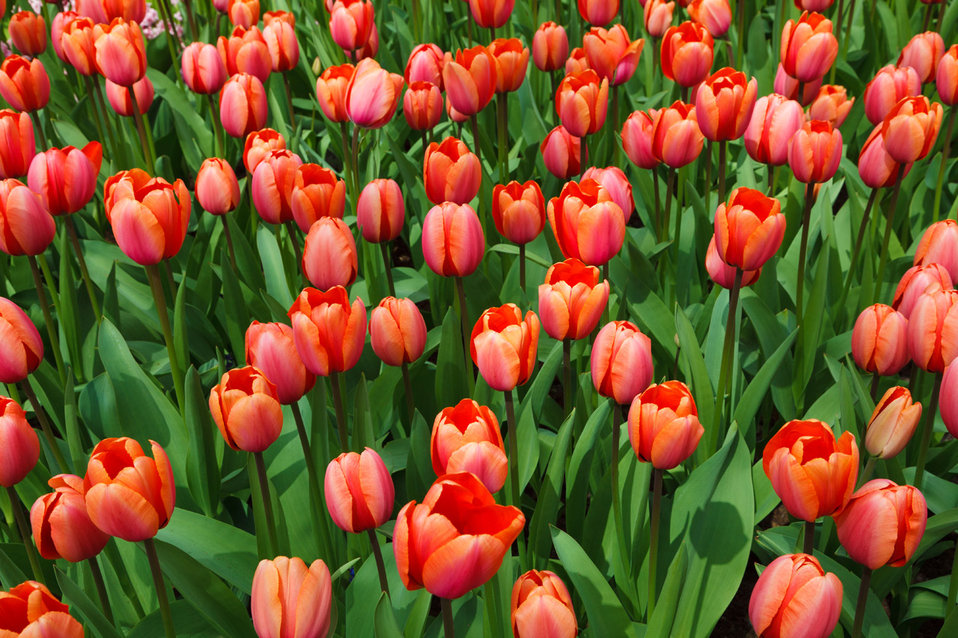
Fresh red tulips

Vivid red tulips in keukenhof gardens.